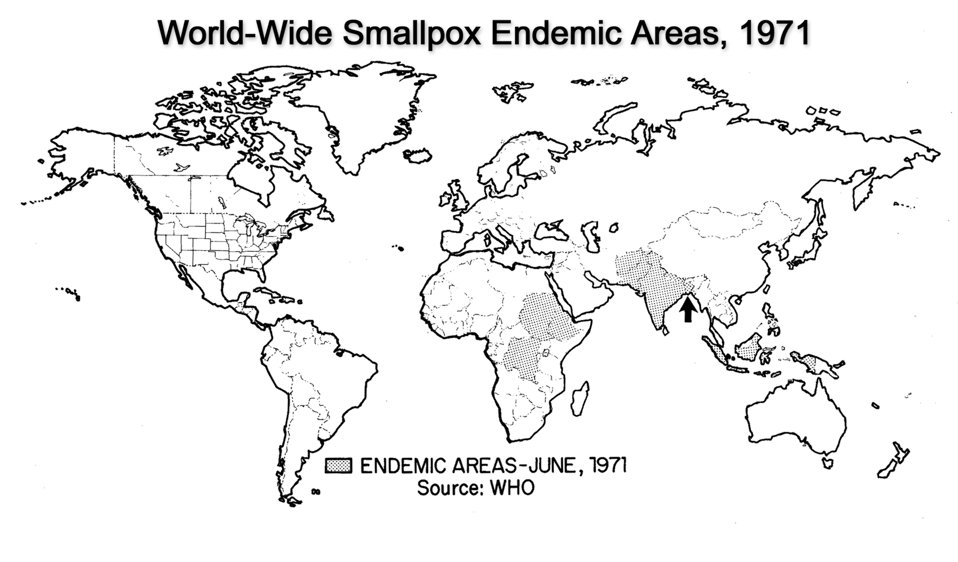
At the time, this 1971 map revealed the distribution of the smallpox virus, and the countries in which it was still endemic.